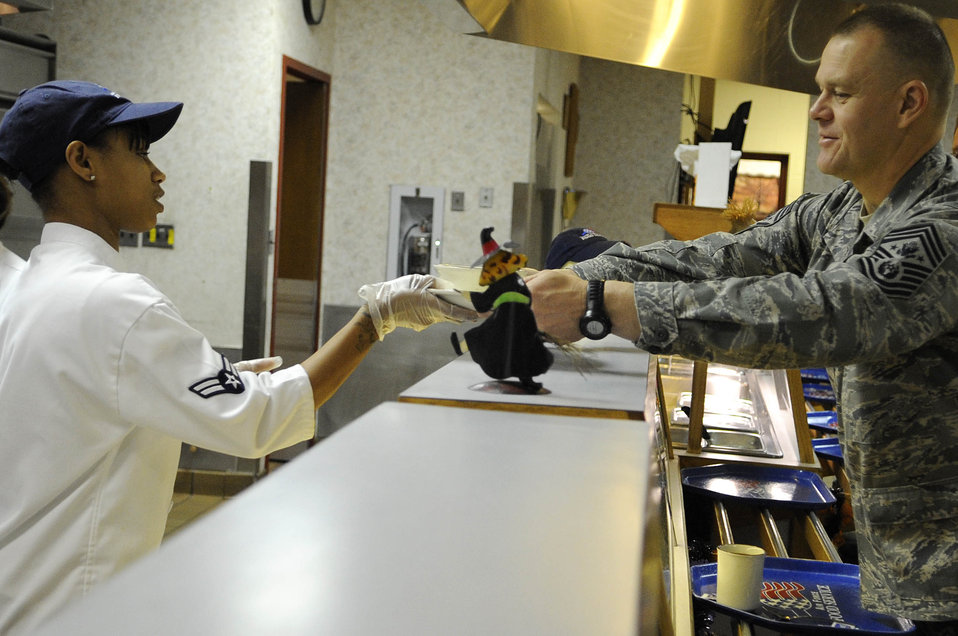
CMSAF visits Ellsworth

Airman 1st Class Tiara Taylor, 28th Force Support Squadron food services journeyman, hands breakfast to Chief Master Sgt. of the Air Force James A. Roy, Oct. 22, 2009, during his two-day visit to Ellsworth Air Force Base, S.D. Chief Roy ate breakfast with recent graduates of Airmen Leadership School and discussed various high-interest Air Force topics.